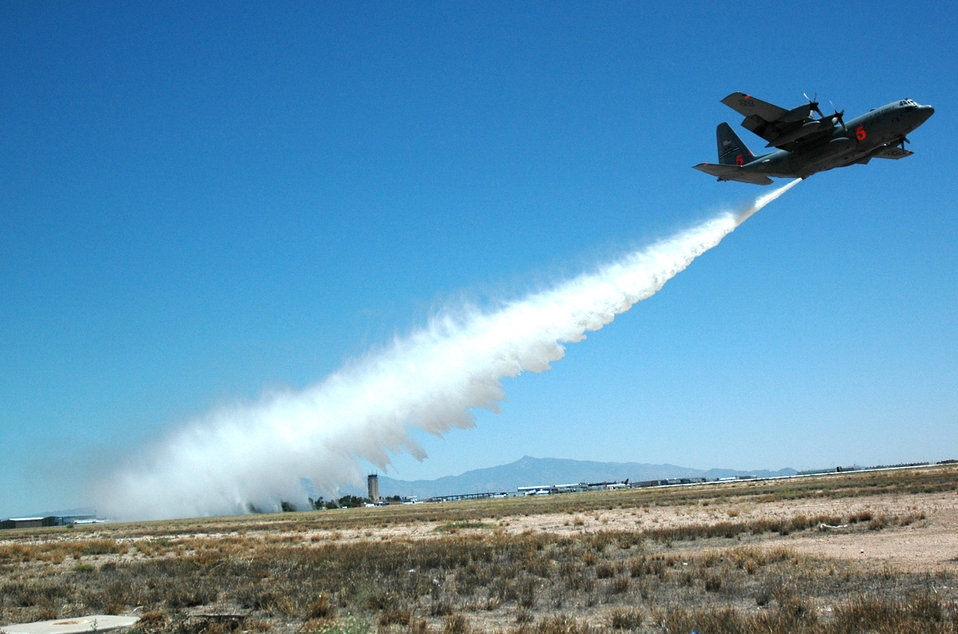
Aircrews, maintainers gear up for wildfire season

A C-130 Hercules with the Air Force Reserve's 302nd Airlift Wing from Peterson Air Force Base, Colo., drops a load of water from the plane's Military Airborne Firefighting System May 6 at the Tucson International Airport in Arizona.